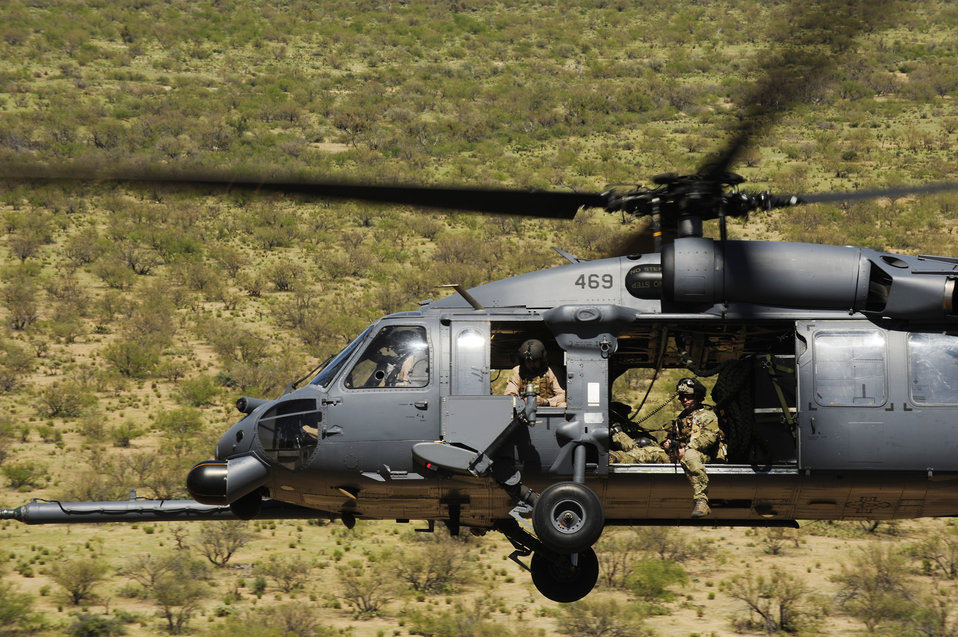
Angel Thunder 2010

An HH-60 Pave Hawk flies over the desert surrounding Davis-Monthan Air Force Base, Ariz., during Angel Thunder 2010, April 15, 2010. The Pave Hawk crew is from the Alaska Air National Guard's 210th Rescue Squadron at Kulis ANG Base in Anchorage, Alaska.